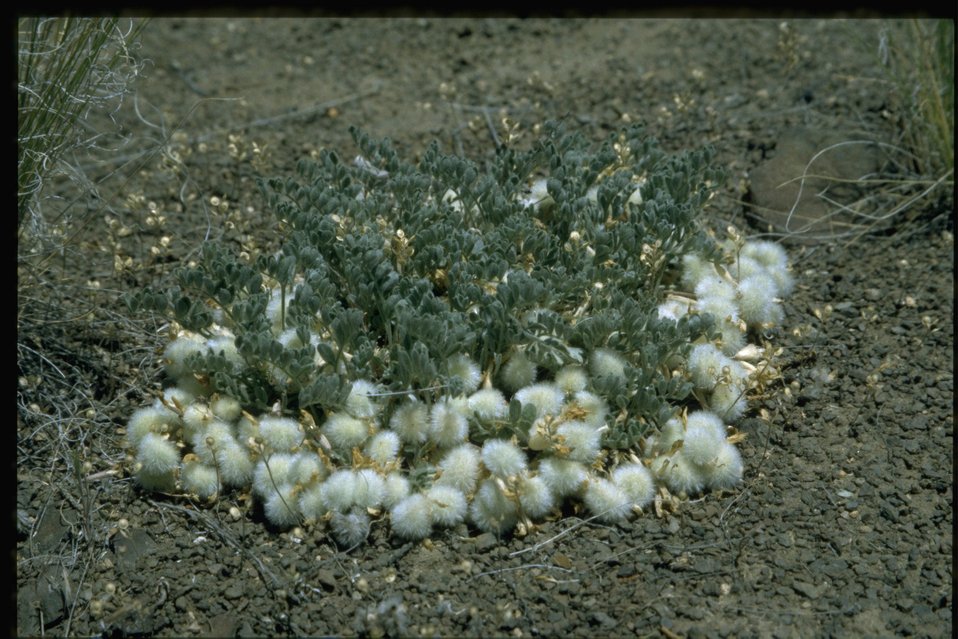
Farshot of woolypod mildvetch (Astragalus purshii) in fruit.